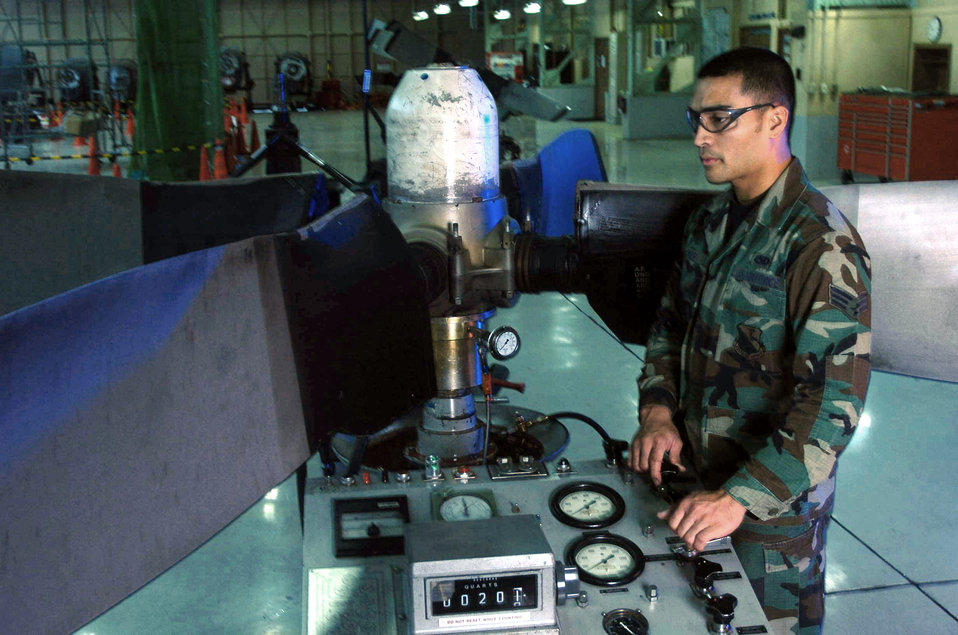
An inside look

YOKOTA AIR BASE, Japan -- Senior Airman Xavier Reyes uses a hydraulic tester to inspect a C-130 Hercules engine propeller for cracks. He is a mechanic assigned to the 374th Maintenance Squadron's T56 engine regional repair center here. The Airmen from the center remove, inspect, repair, modify and install propeller assemblies and components on C-130s from throughout the Pacific region.